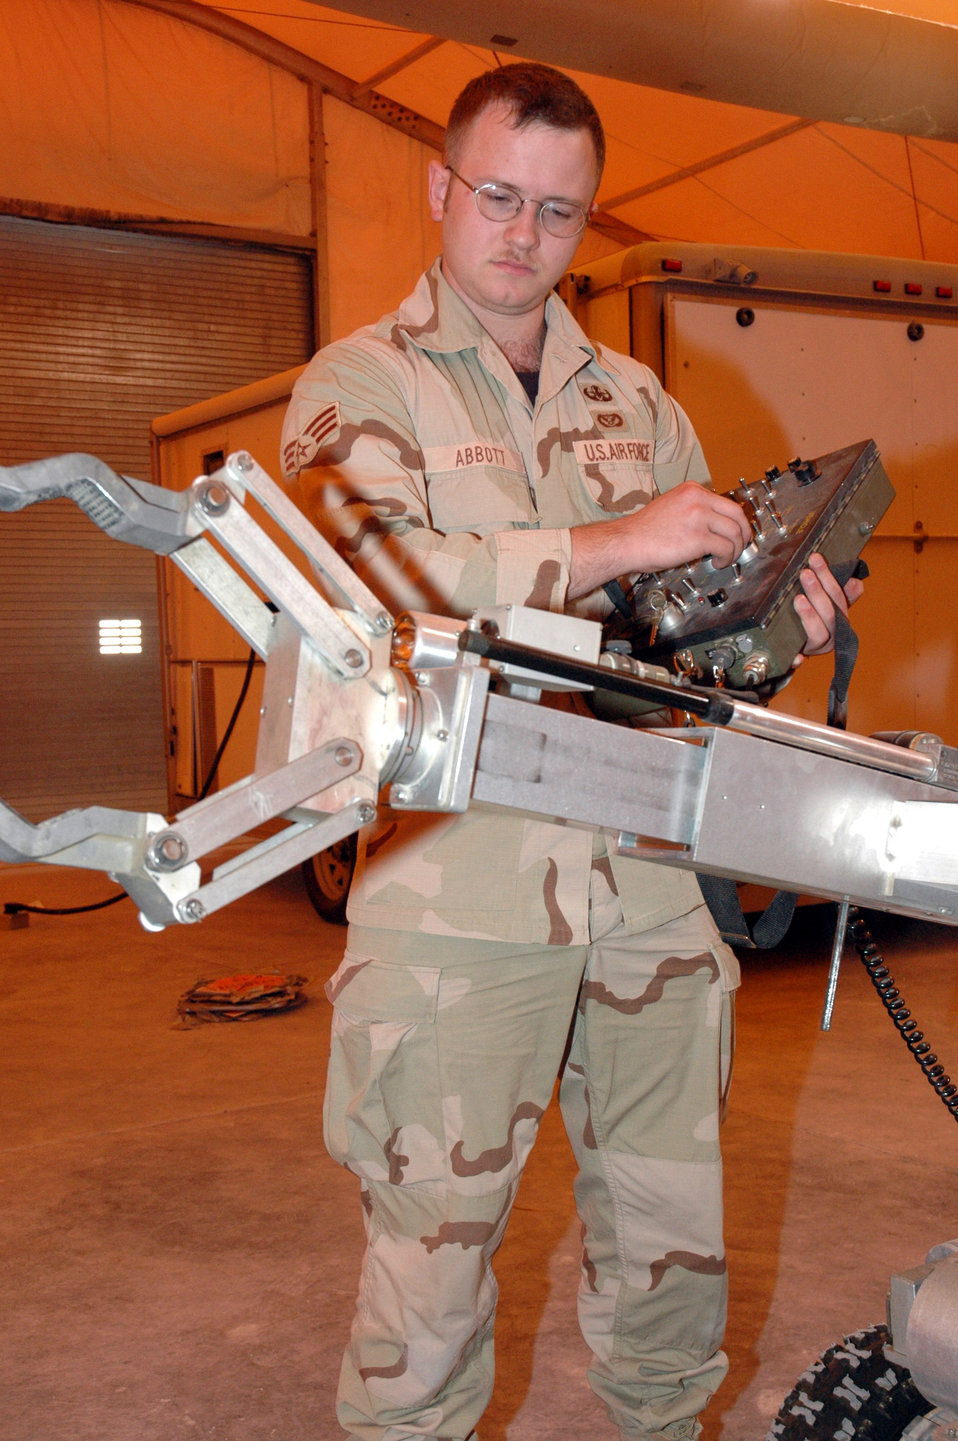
Expeditionary wing supports war efforts in many ways

Senior Airman Matthew Abbott performs a pre-operation inspection of an explosive ordnance response robot. The function tests ensure a full range of motion before shipping it to explosive ordnance technicians uprange. Airman Abbot is an explosive ordnance disposal journeyman assigned to 379th Expeditionary Civil Engineer Squadron in Southwest Asia.